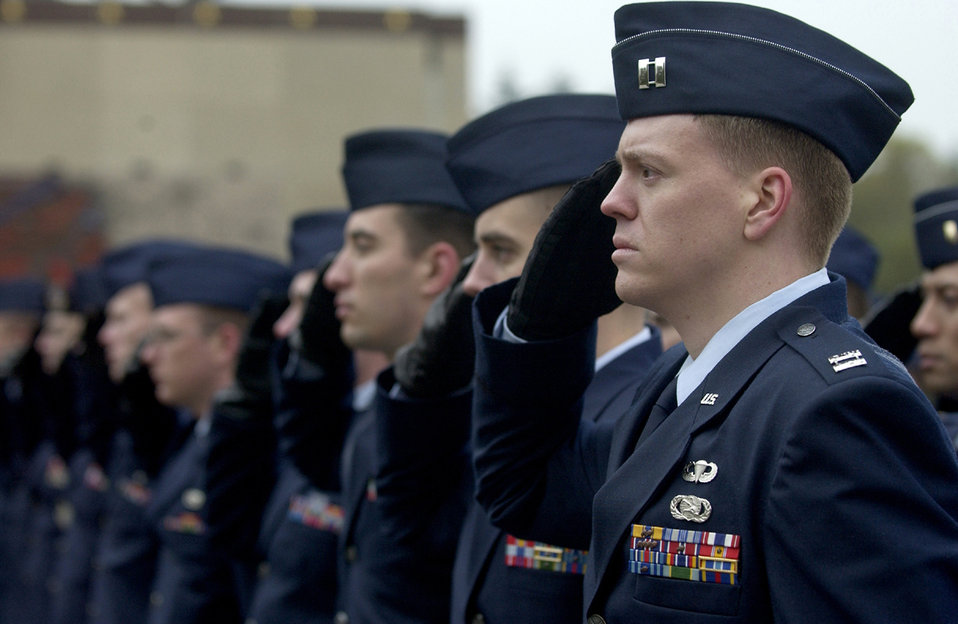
Spangdahlem Airmen honor Veterans

Airmen from the 52nd Fighter Wing at Spangdahlem Air Base, Germany, participate in the Veterans Day memorial ceremony the Luxembourg American Cemetery and Memorial on Nov. 11.